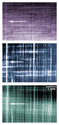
Strained Silicon Devices

X-ray topographs of three different strata of a strained-silicon wafer show close correspondence in defects from the base silicon layer (top) through the final strained-silicon layer (bottom). Color has been added for contrast, one particular defect area is highlighted.